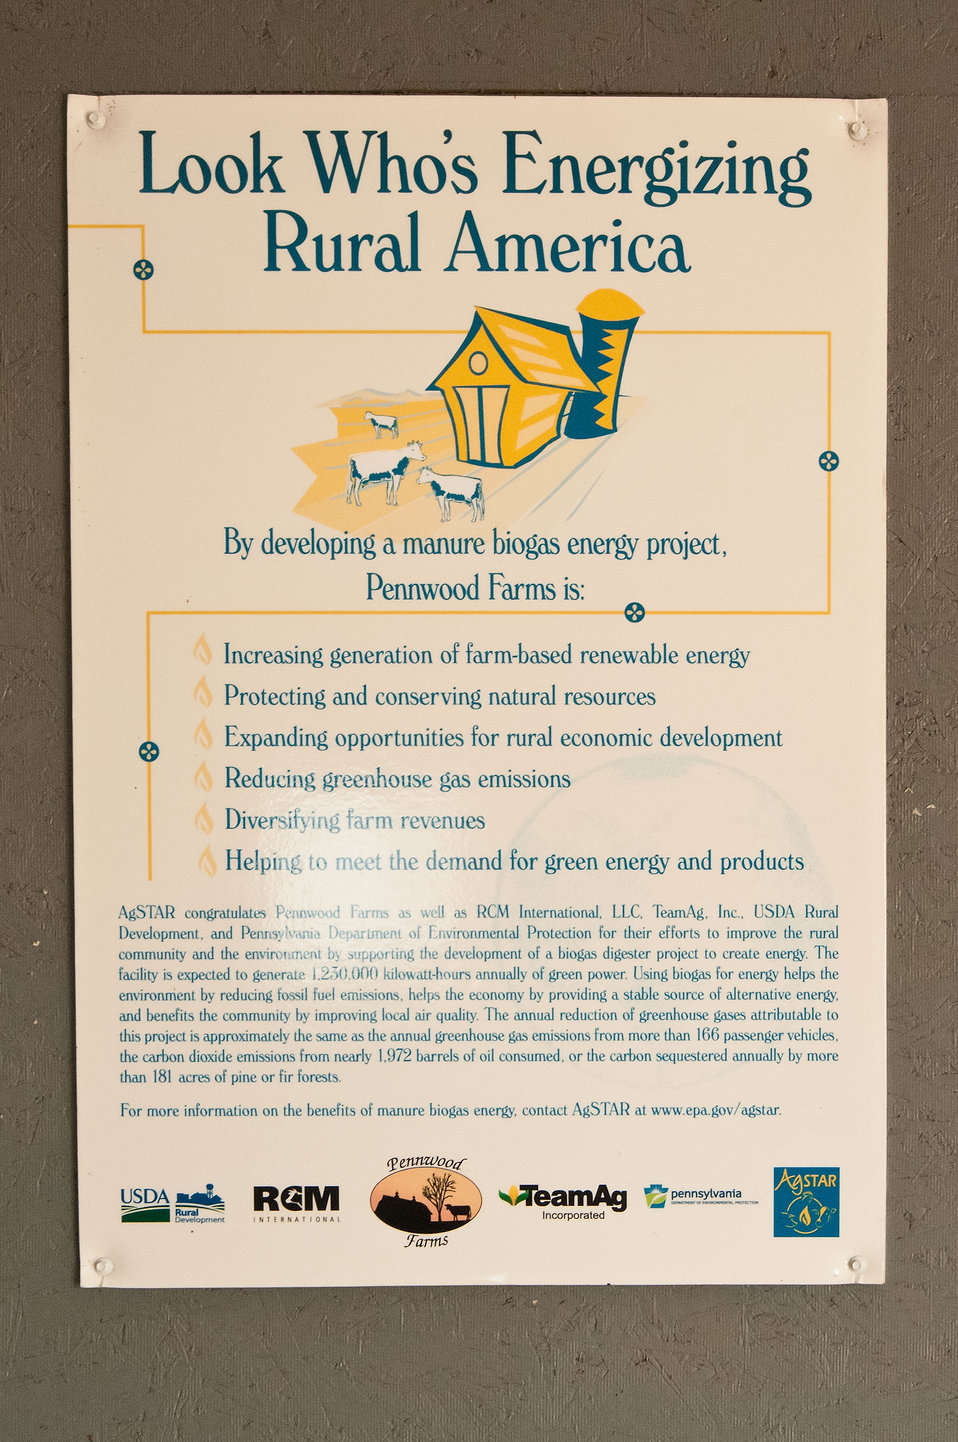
A sign promoting anerobic digesters at the Pennwood Dairy Farms owned and operated by the Stoltzfus family in Berlin, PA. The sign is located in the building houses the engine that produces electricity from an anaerobic digester the dairy uses to produce energy. The digester produces one million kilowatt hours; half of the energy needs of the farm, the other five hundred thousand kilowatt hours are sold back to the grid. An anaerobic digester is a component of a waste management system that provides biological treatment in the absence of oxygen. The digester captures biogas for energy production, manages odors, reduces the net effect of greenhouse gas emissions, and reduces pathogens. The anaerobic digester practice is part of a planned conservation management system that manages manure and/or comprehensive nutrient management system. Agriculture Secretary Tom Vilsack visited the dairy on Tuesday, July 17, 2012. During his visit Secretary Vilsack highlighted the U.S. Department of Agriculture’s( USDA) energy efficiency programs and announced a new effort to help rural consumers make affordable, energy-efficient improvements to their homes and businesses.